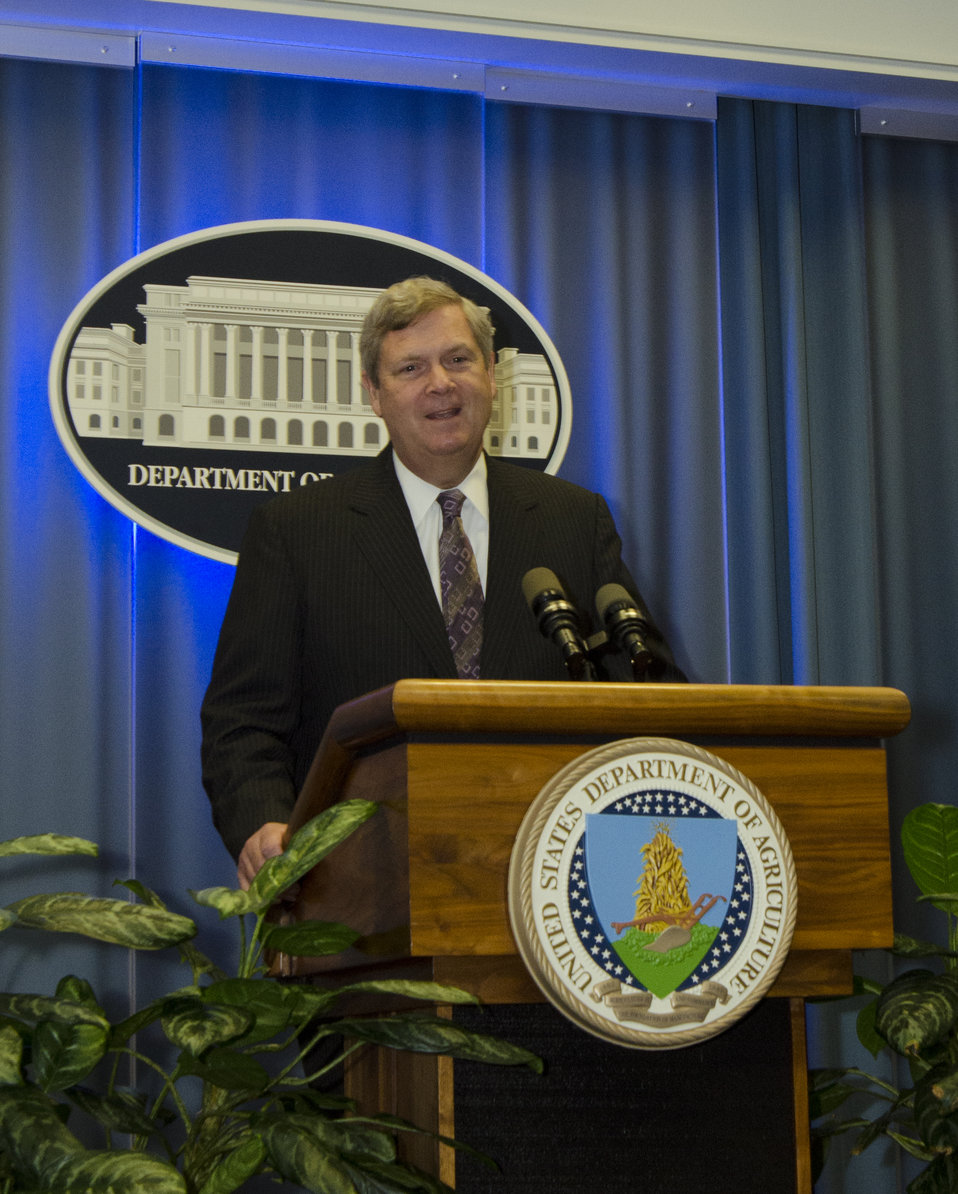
Agriculture Secretary Tom Vilsack speaks at the swearing in ceremony of Krysta Harden as the new Deputy Secretary of Agriculture and Robert Bonnie as the new Under Secretary for Natural Resources and Environment (NRE) at the U.S. Department of Agriculture in Washington, D.C. on Monday, Aug. 12, 2013.